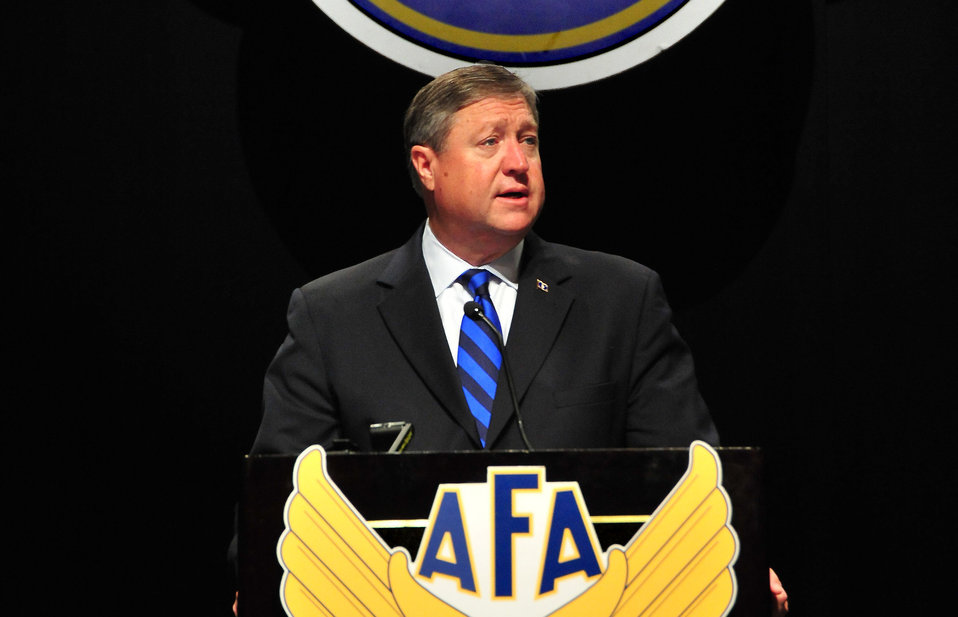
SECAF addresses current, future challenges for Air Force

Secretary of the Air Force Michael Donley speaks at the Air Force
Association's 2011 Global Warfare Symposium in Los Angeles, Calif., Nov. 18,
2011. He discussed the Air Force's future budget outlook and the importance
of supporting Airmen and their families while at the same time protecting
the ability of the service to sustain core missions and capabilities.